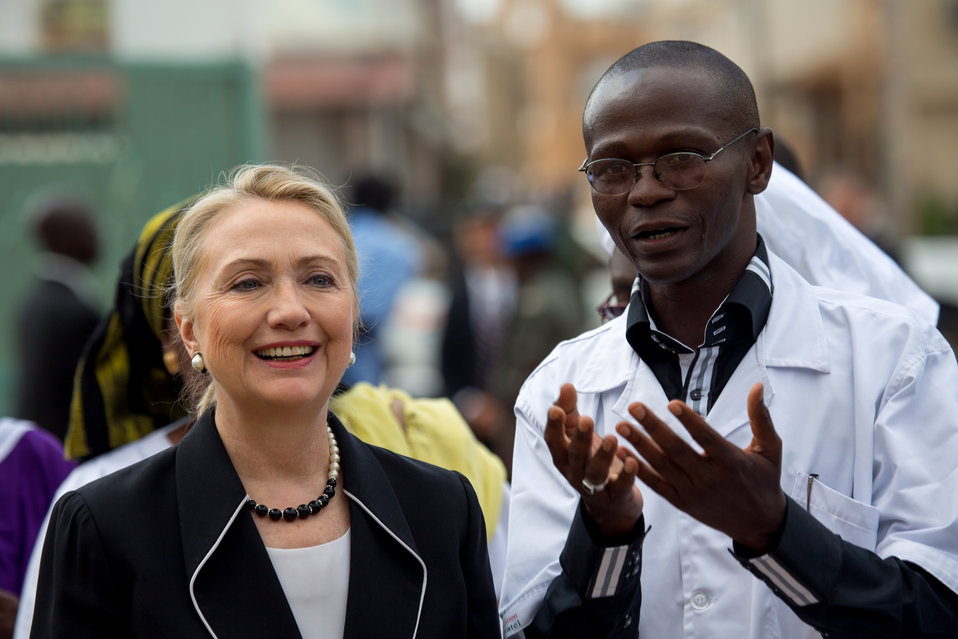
Secretary Clinton with Director Dr. Abdou Karim Diop

U.S. Secretary of State Hillary Rodham Clinton speaks with Director Dr. Abdou Karim Diop of the Philippe Maguilen Senghor Health Center in Yoff, Dakar, Senegal, on August 1, 2012.